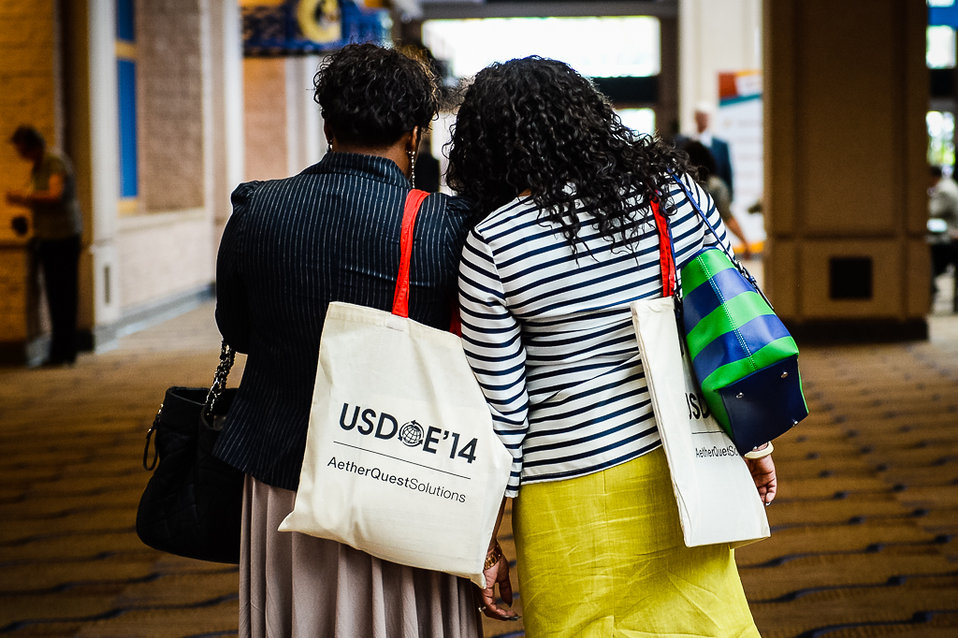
OSDBU Conf 14